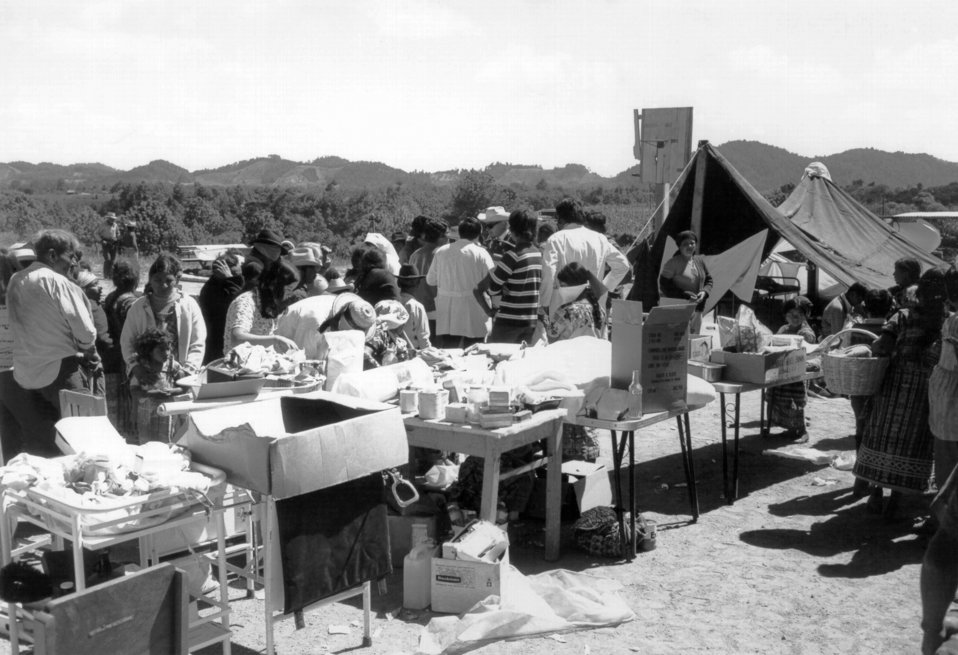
This image was taken at an outdoor clinic in the Guatemalan town of Tecpan, after a devastating earthquake in 1976.